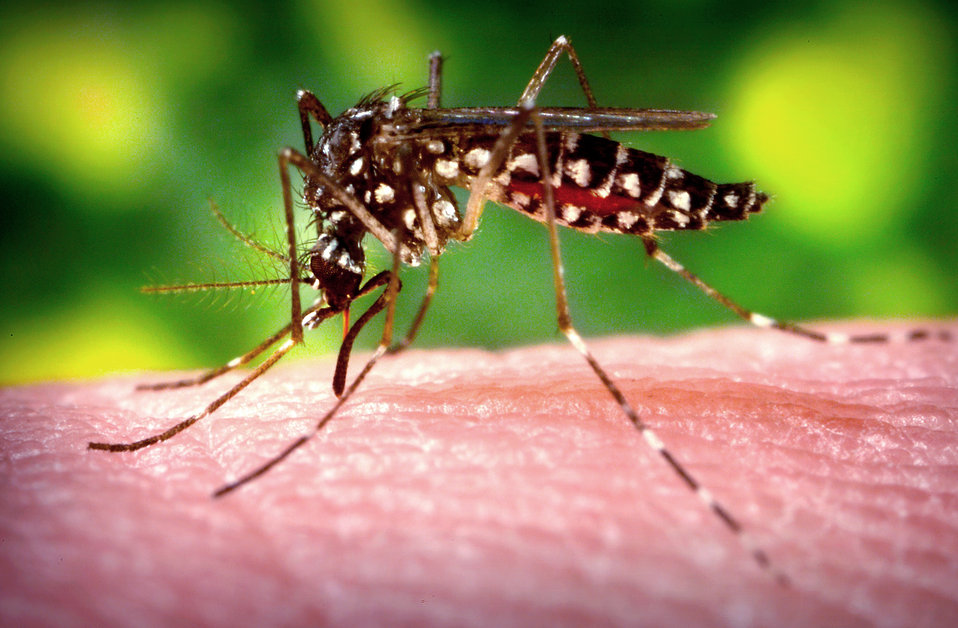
This 2006 image depicted a female Aedes aegypti mosquito as she was obtaining a blood-meal from a human host through her fascicle, which being transparent, reflected the blood's red color. In this case, what would normally be an unsuspecting host was actually the CDC's biomedical photographer's own hand, which he'd offered to the hungry mosquito so that she'd alight, and be photographed while feeding. As it filled with blood, the abdomen became distended, thereby, stretching the exterior exoskeletal surface, causing it to become transparent, and allowing the collecting blood to become visible as an enlarging intra-abdominal red mass, as is the case in PHIL# 9175, and 9176.